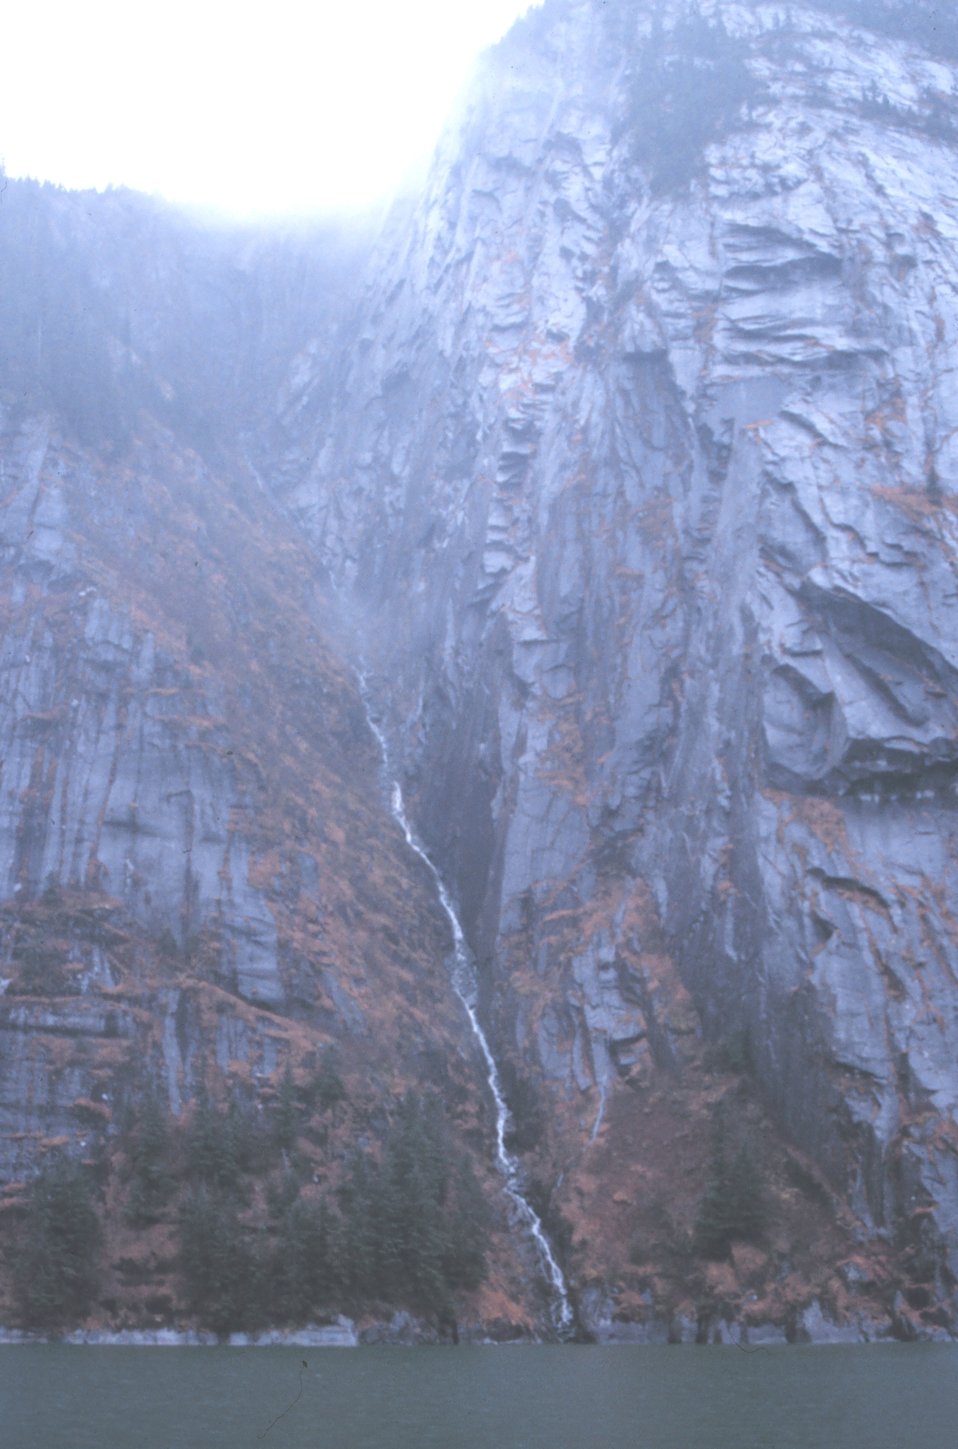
Waterfalls abound throughout Tracy Arm Fjord